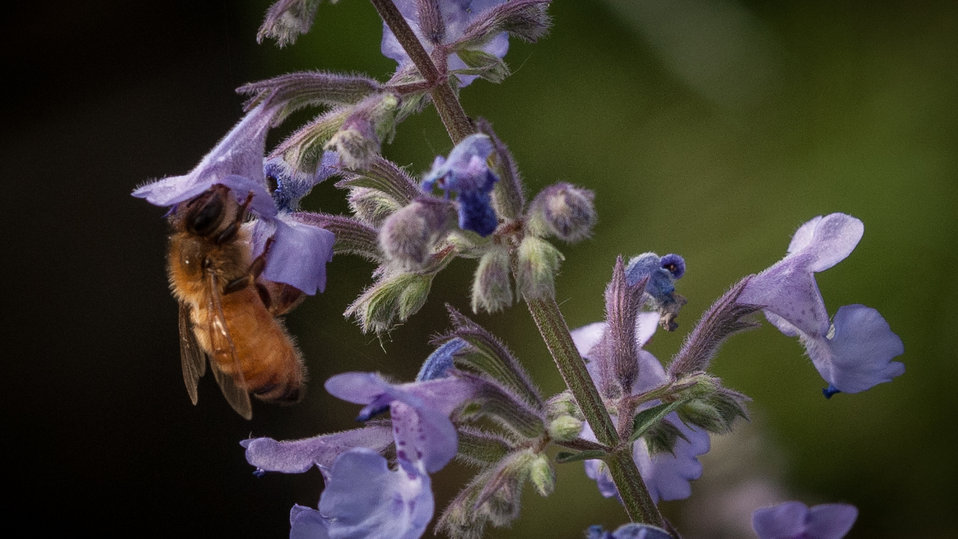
A honey bee is attracted to flowers in the U.S. Department of Agriculture People's Garden, pollinator garden, outside the headquarters' Whtten Building in Washington, D.C., on Wednsday, May 22, 2013.